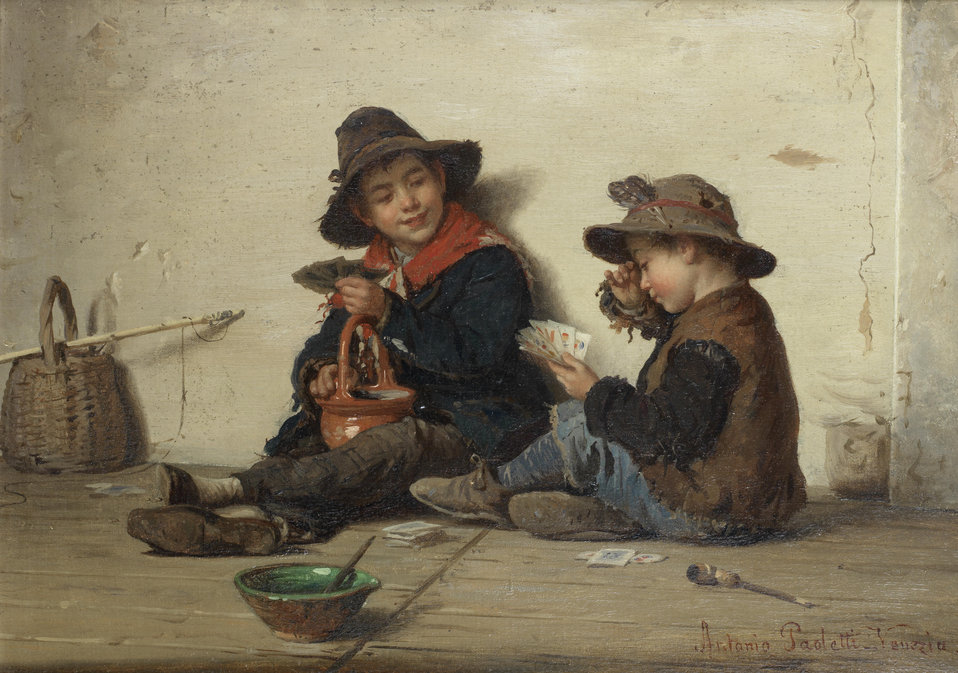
Antonio Ermolao Paoletti The bluff